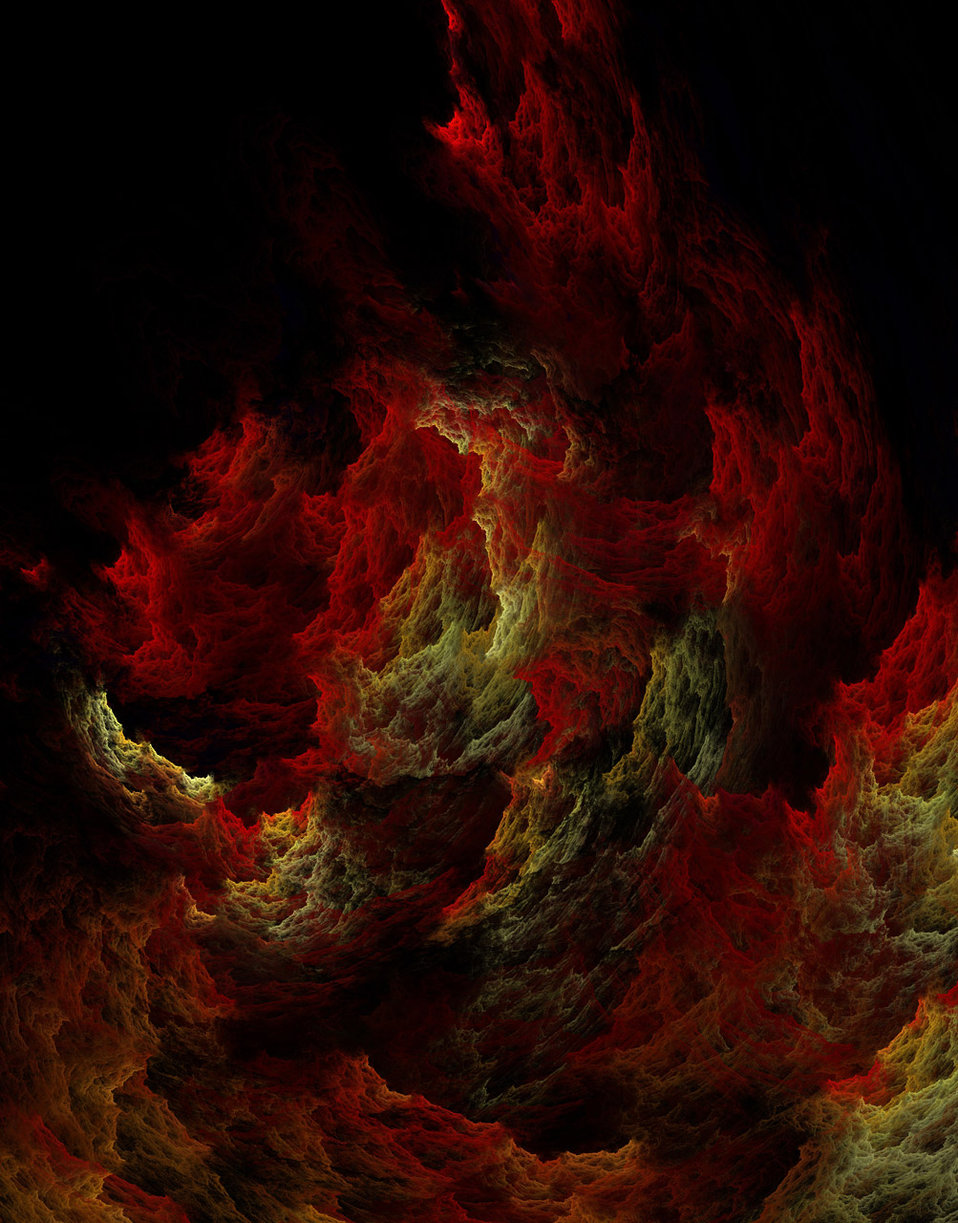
Burning in hell

A eerie digital concept of a burning path into the depths of hell.